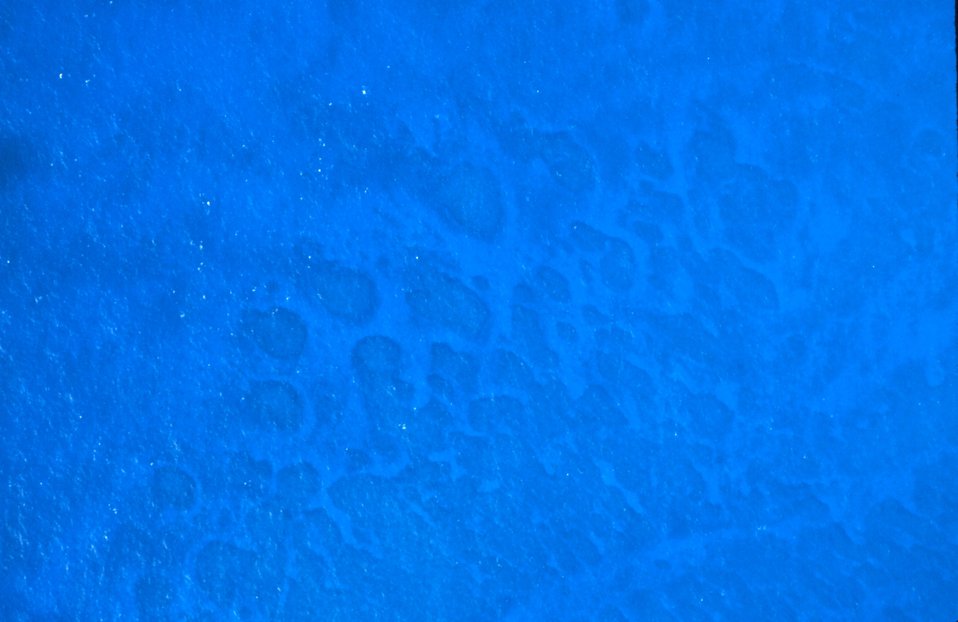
Aerial view of patterns in a coral reef.